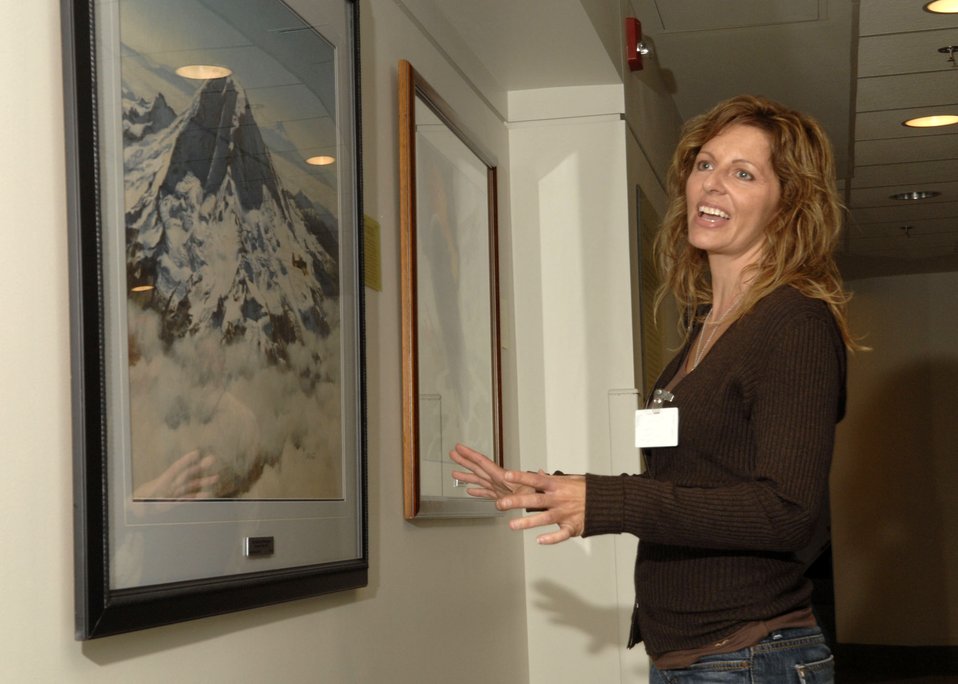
Illustrated Excitement

WASHINGTON - Artist Mia Tavonatti illustrates excitement while looking at the work of other artists after listening to Secretary of the Air Force, Michael W. Wynne make a few remarks about Keith Ferris and the many other artists that participated in the Air Force's Art Program and 60th Anniversay Art Exhibit Oct. 19, 2006.